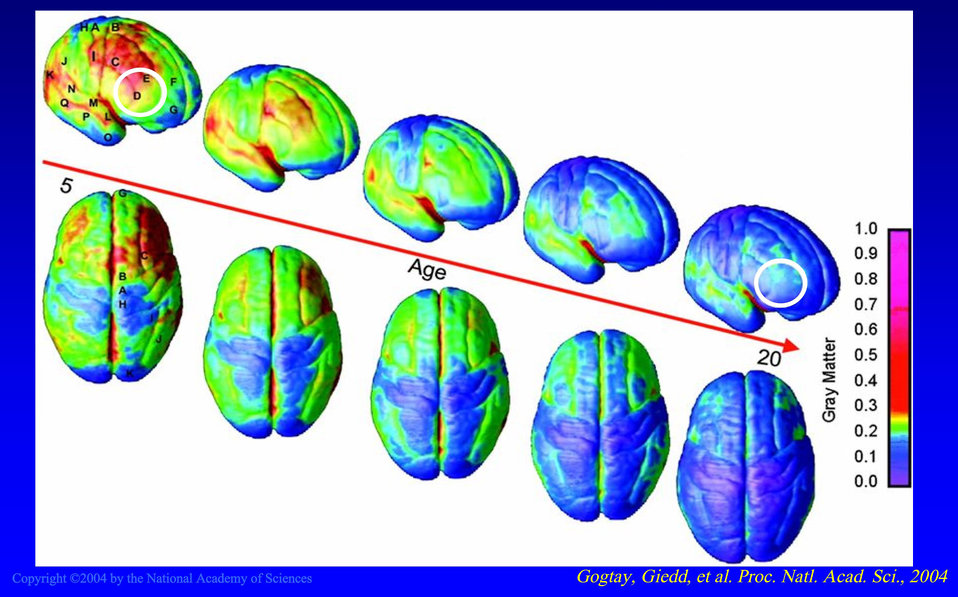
Brain Scan-Healthy

This slide illustrates brain development through early adulthood, with blue indicating the mature state. The prefrontal cortex (white circle), which governs judgment and decision-making functions, is the last part of the brain to develop.